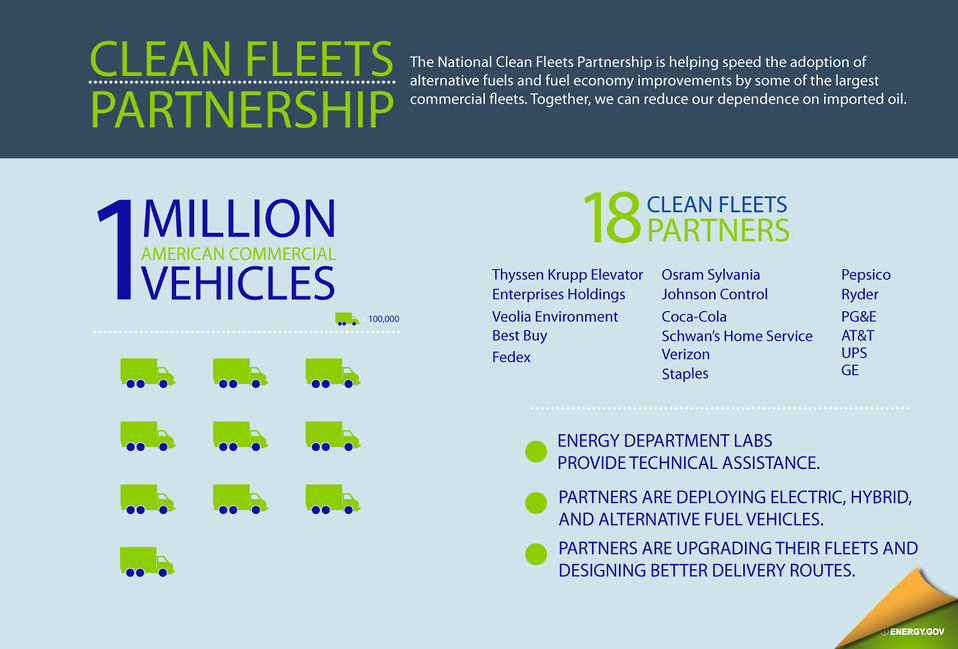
National Clean Fleets Partnership